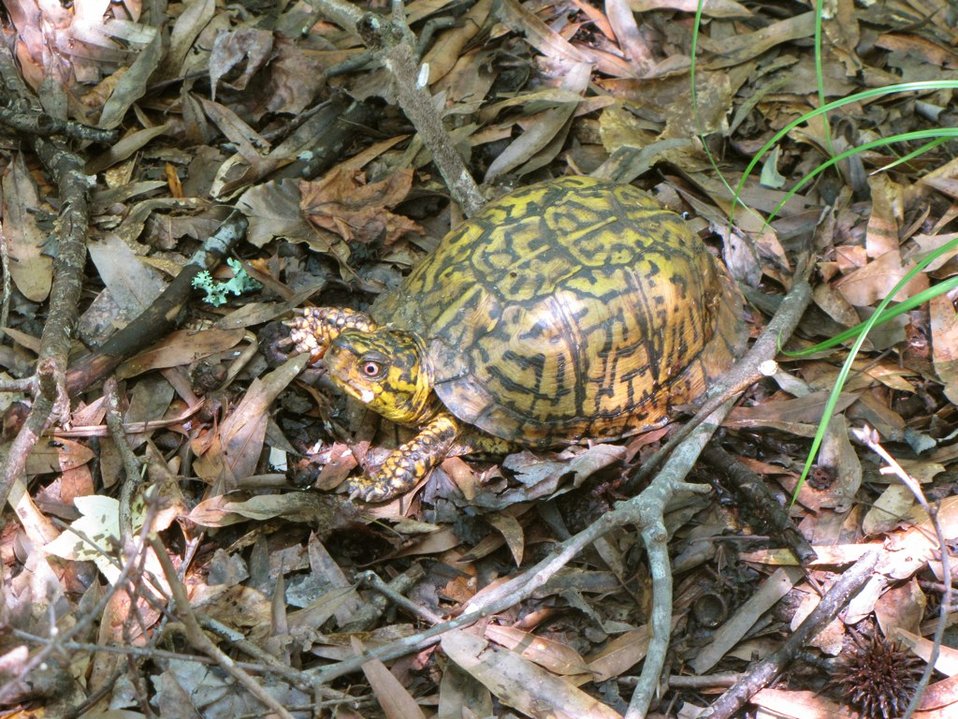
Mattaponi Wildlife Management Area, Virginia

Survey (June 27 - 28, 2012)

Eastern box turtle (Terrapene carolina carolina) eating a mushroom.